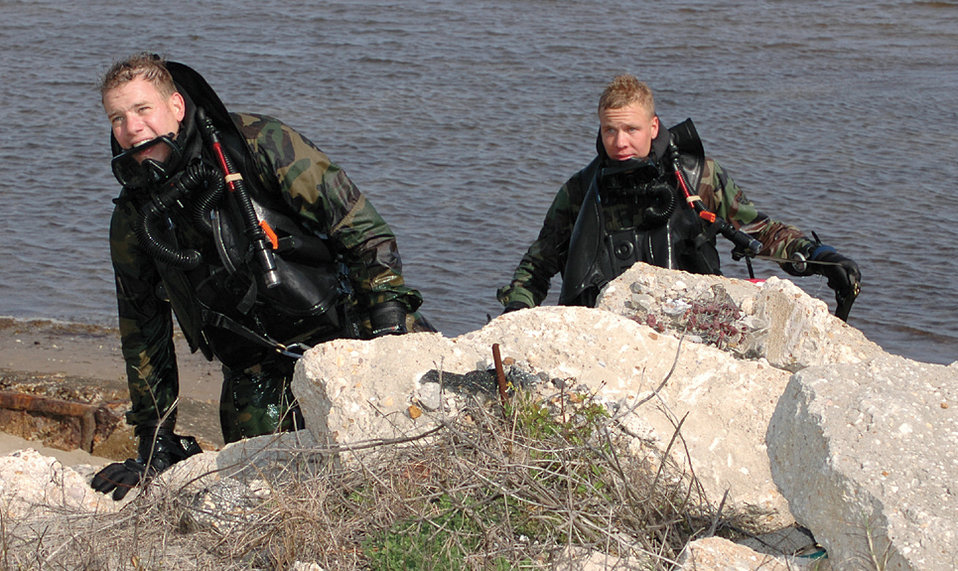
Combat dive course

Airman 1st Class Josh Welch and Staff Sgt. Brian Enslev, Combat Dive Course students, reach the shore after a closed circuit dive.